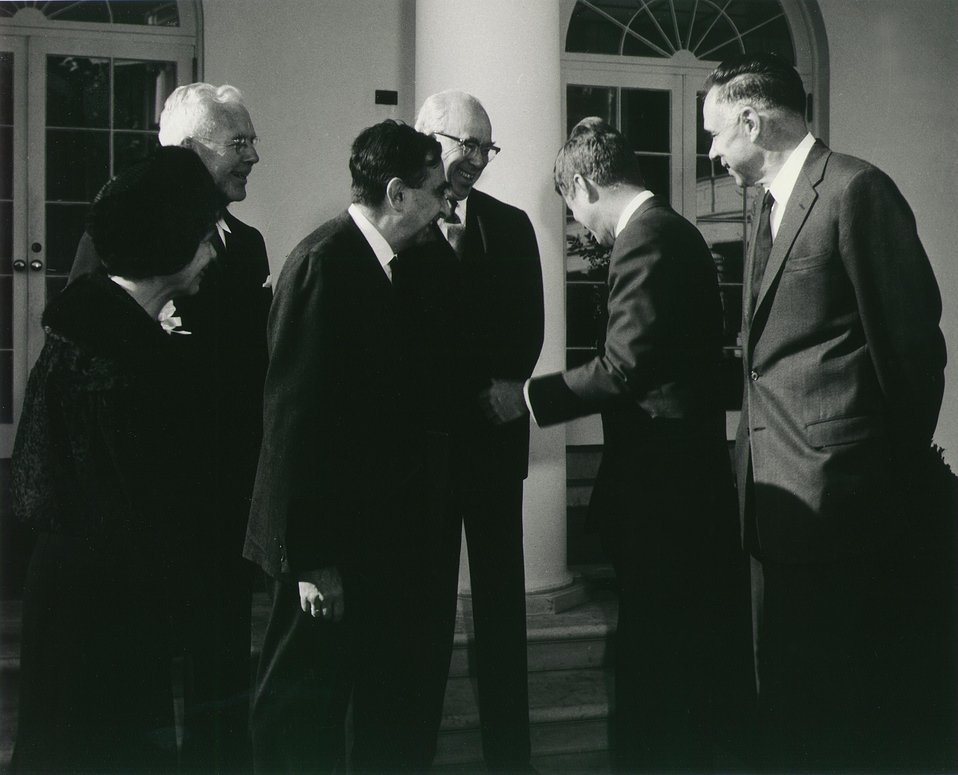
Fermi Award Ceremony for Teller in 1962.